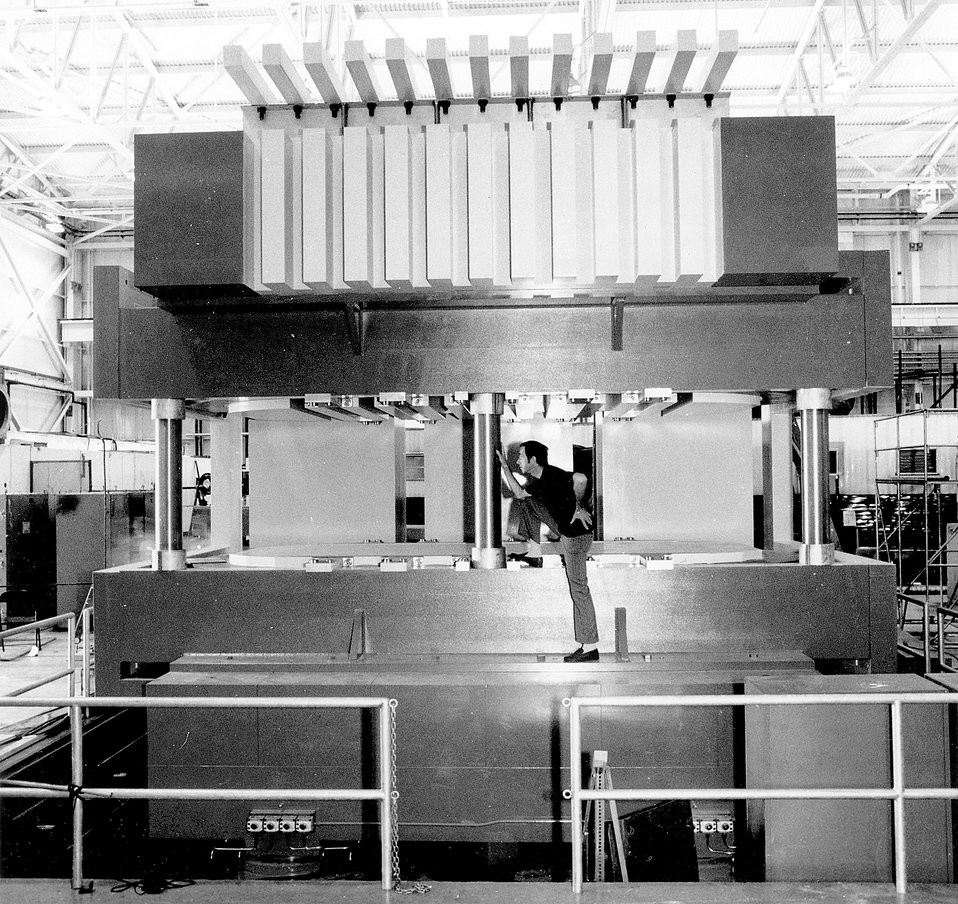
A major experimental facility, the multiparticle spectrometer (MPS) at the AEC's Brookhaven National Laboratory. c. 1974